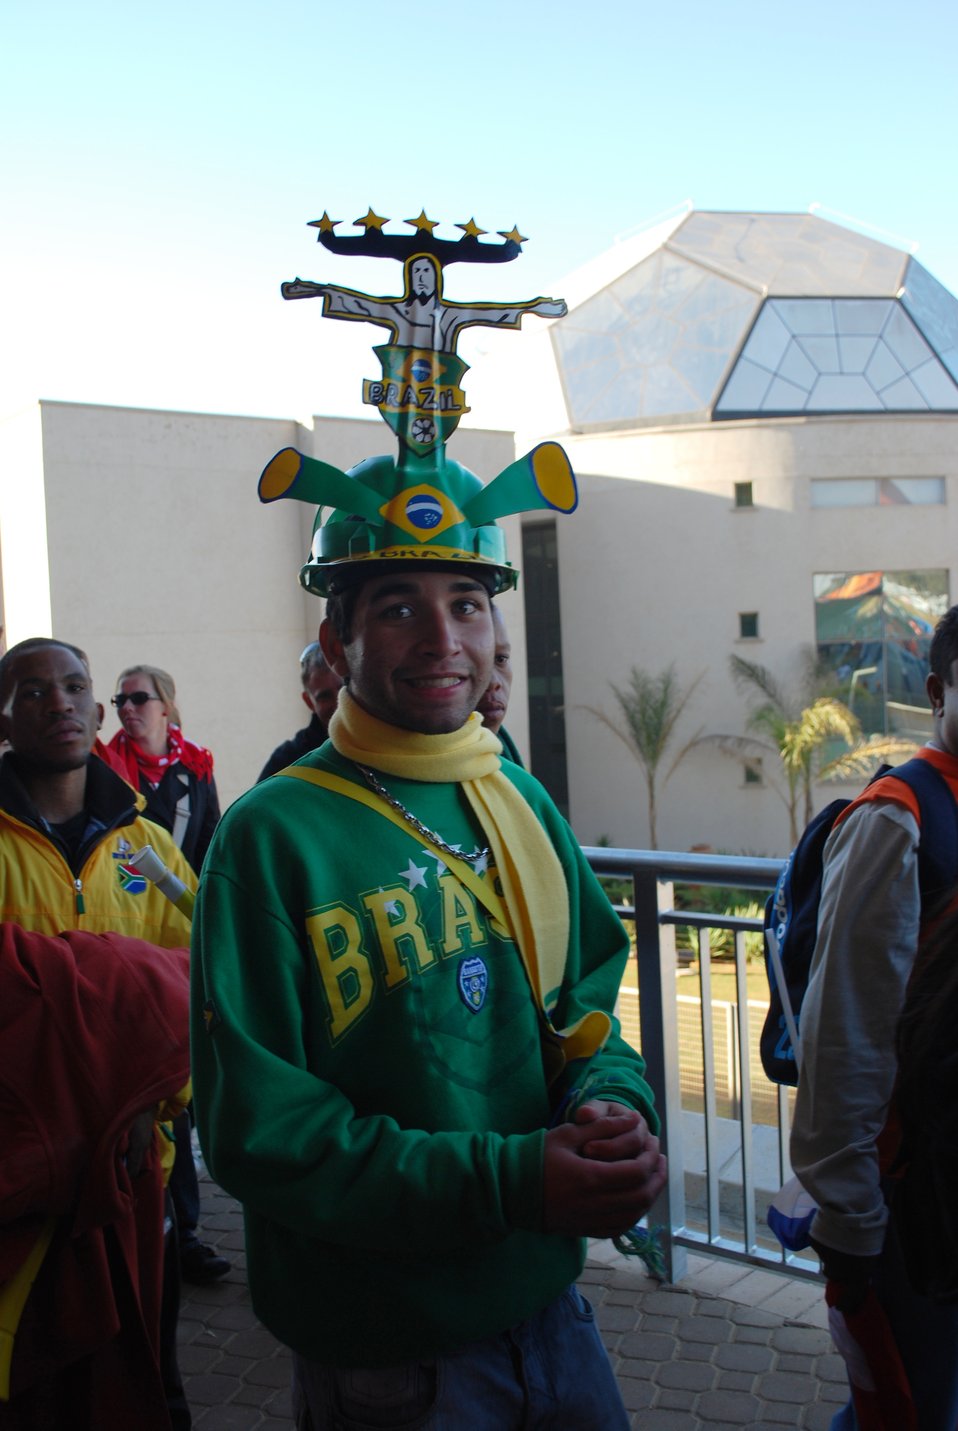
A Brazilian fan shows his pride at a World Cup soccer match in South Africa.